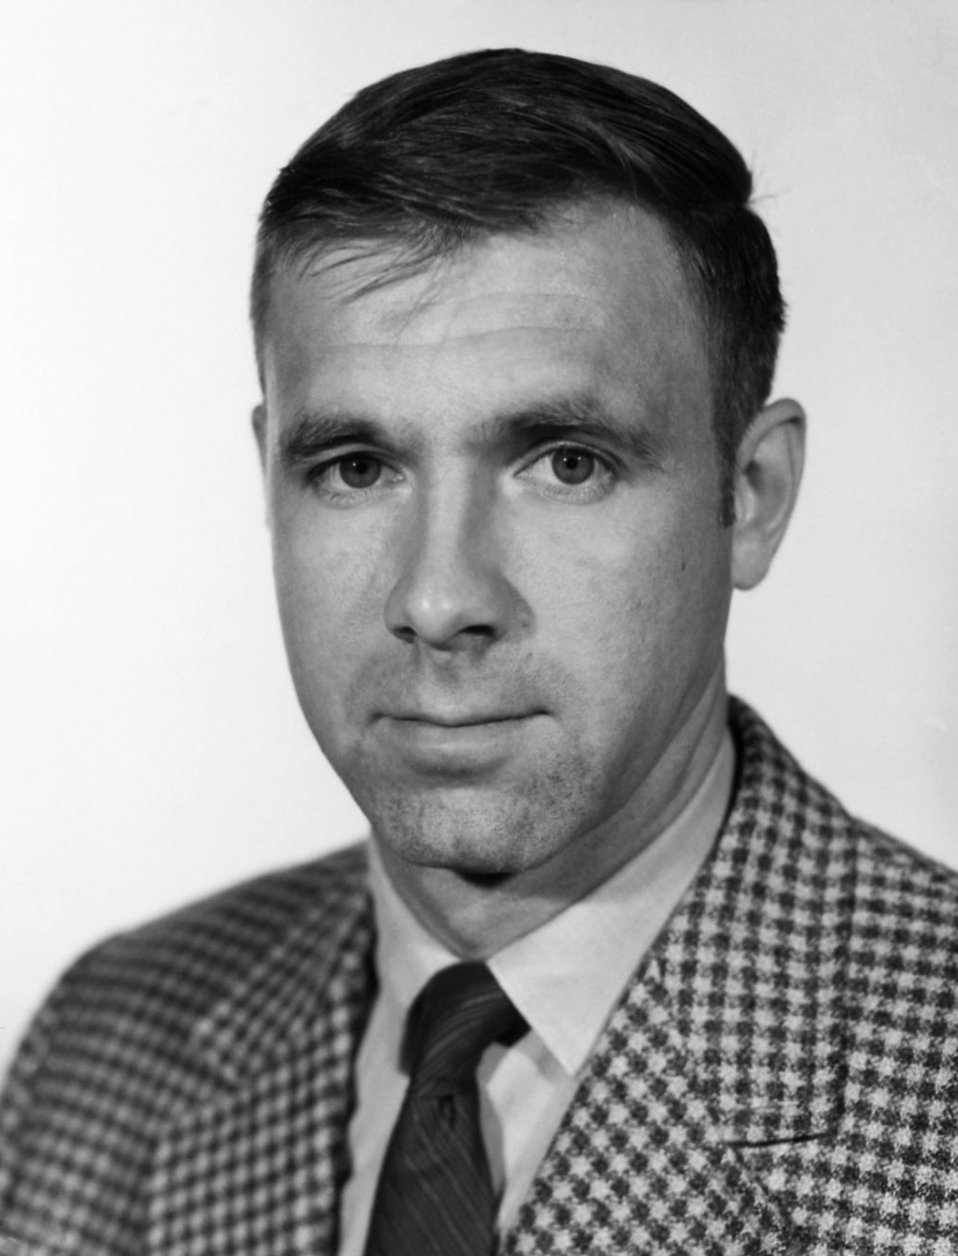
This was a photographic portrait of William H. Foege, M.D., M.P.H., former CDC director from 1977 - 1983. While in office, Dr. Foege worked to expand the agency's mission to include injury, violence, and chronic diseases in addition to infectious disease monitoring and prevention.